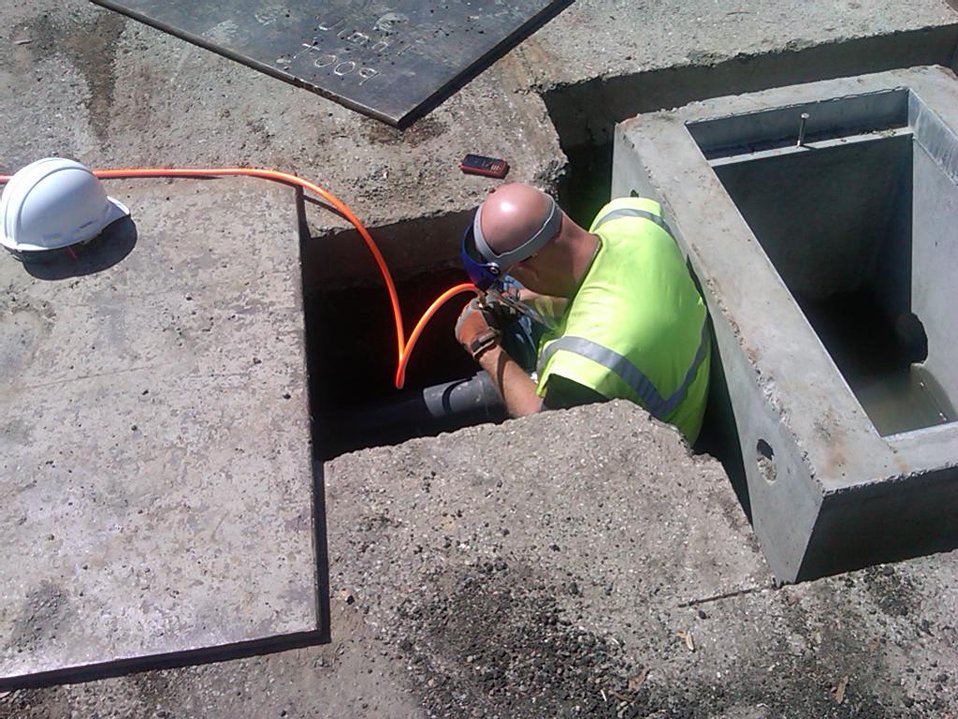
Recovery Act Supports Soil and Debris Cleanup, Groundwater Treatment at SLAC

Recovery Act workers are on track to remove more than 30,000 cubic yards of contaminated soil and debris at the SLAC National Accelerator Laboratory by September 2011.
The Recovery Act invested $14.3 million in legacy cleanup activities at SLAC. In addition to removing contaminated soil and debris that is shipped to local disposal facilities, Recovery Act workers installed three new groundwater treatment systems.